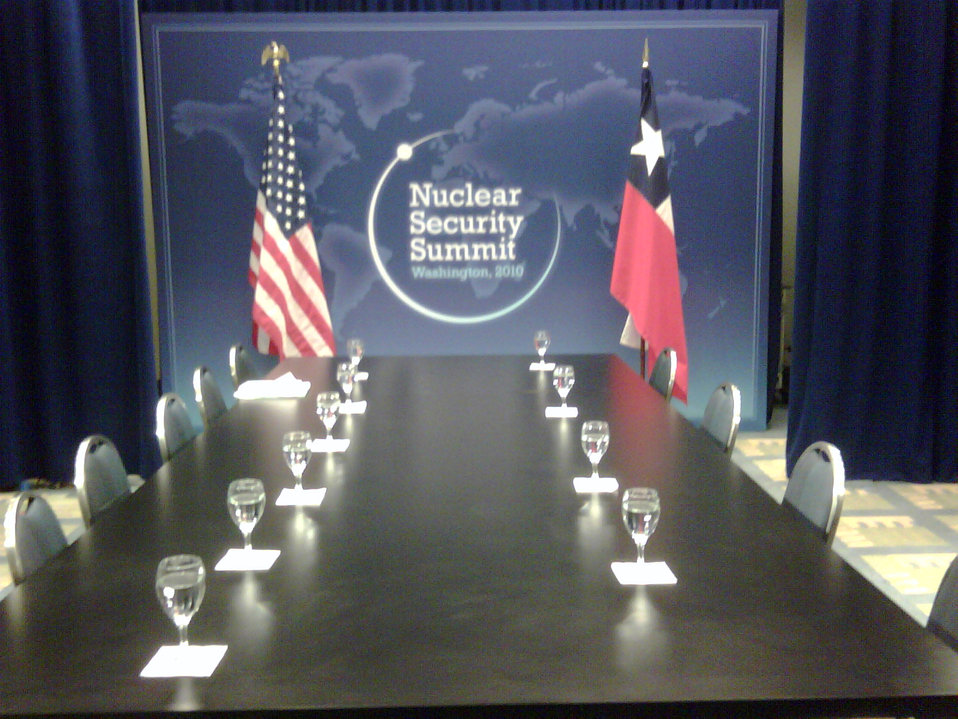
Behind the Scenes: Bilateral Meeting Room

The bilateral meeting room used by U.S. Secretary of State Hillary Rodham Clinton as it appears between meetings during the Nuclear Security Summit at the Washington Convention Center in Washington, DC April 13, 2010.